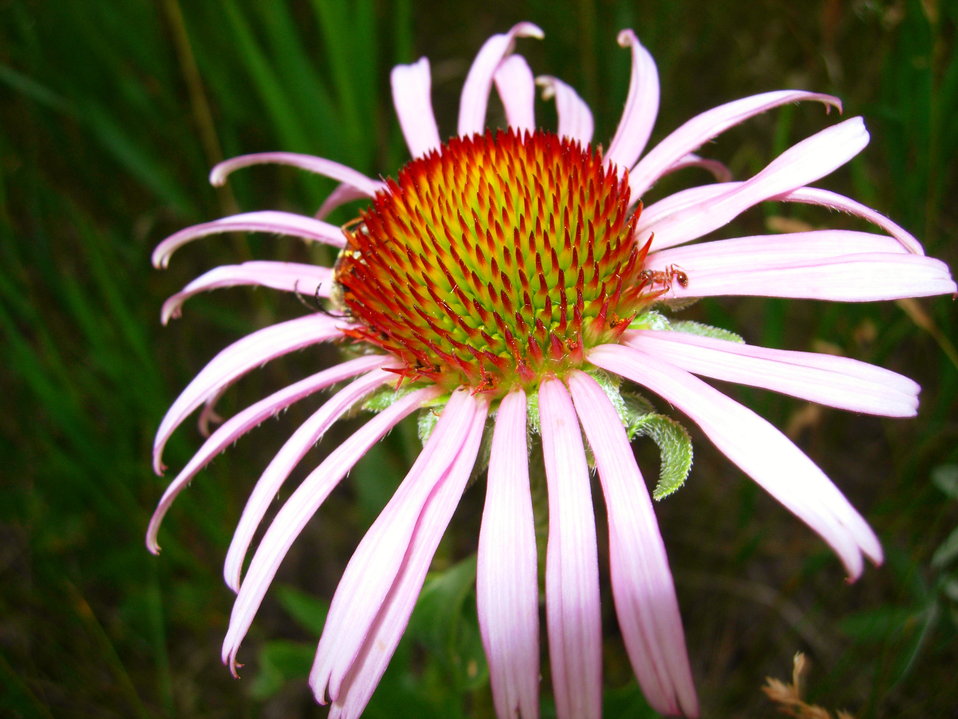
Purple Coneflower blooming on the Upper Souris Refuge National Wildlife Refuge in North Dakota.